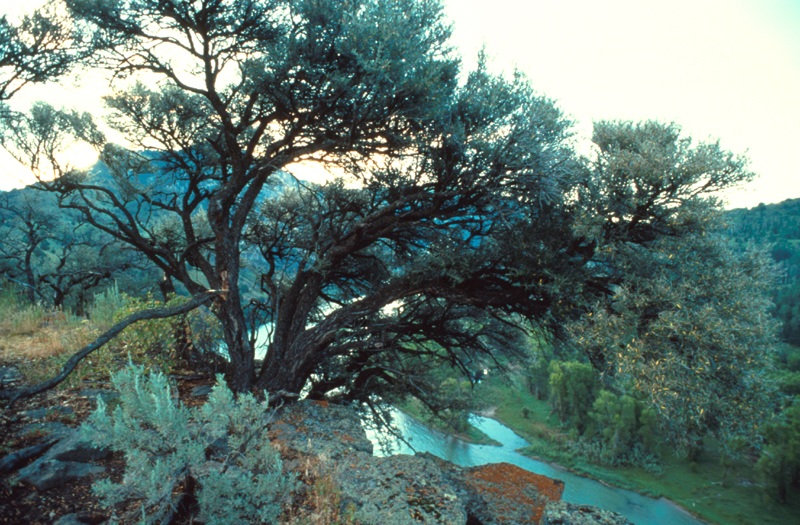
South Fork of the Snake River